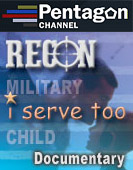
'Recon' program focuses on military children

A Pentagon Channel documentary on military children will be repeated throughout the holiday season. The show will also be available via podcast, vodcast and video on demand.